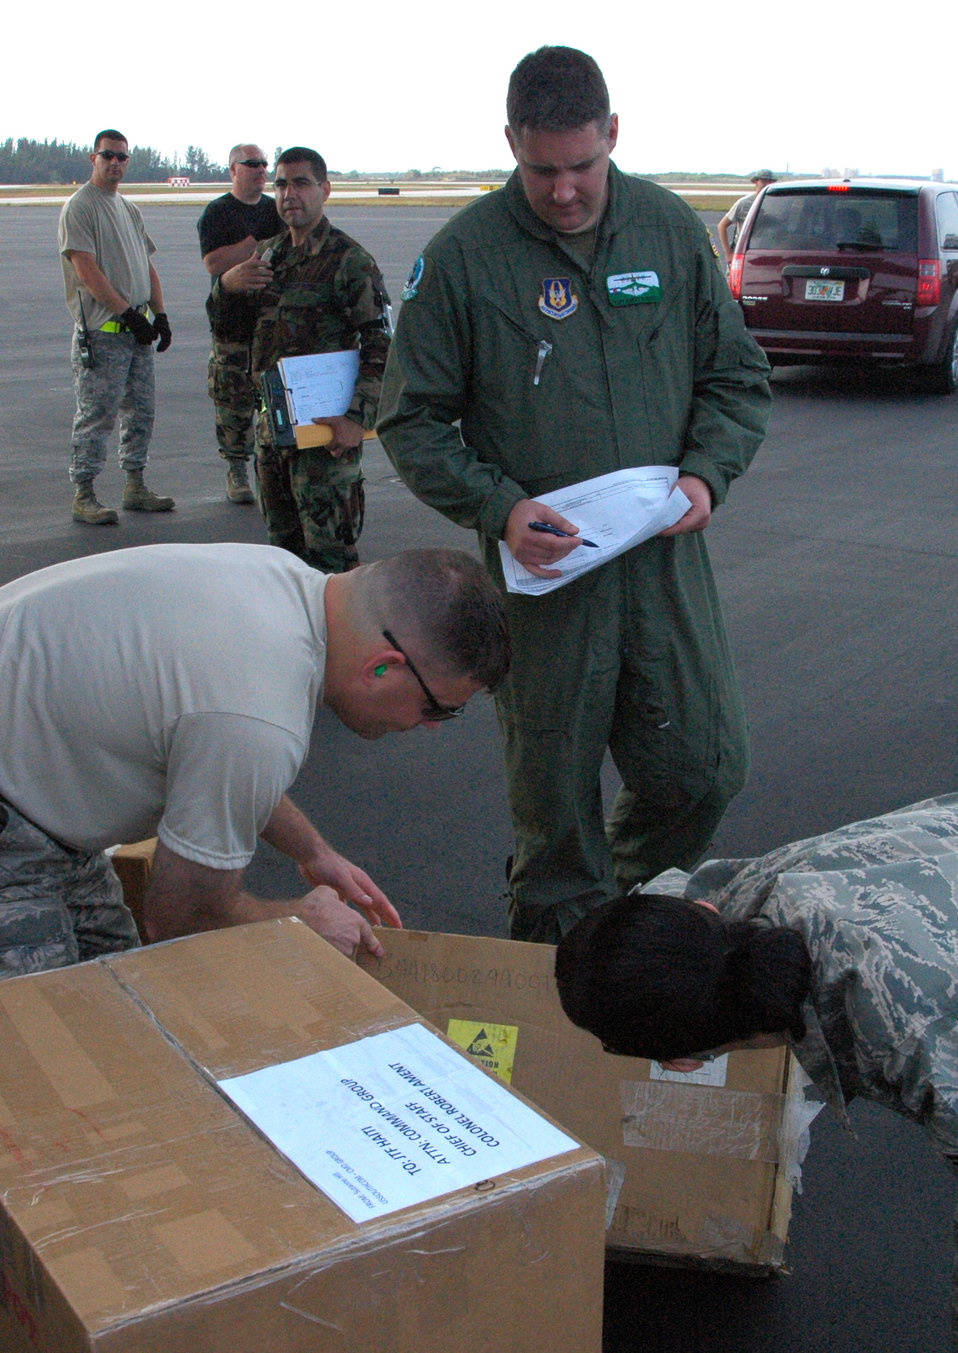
Airmen continue relief aid flights into Haiti

Tech. Sgt. Barry Burkitt goes over packages prior to their loading Jan. 30, 2010, at Homestead Air Reserve Base, Fla. The packages were later loaded onto a C-130 Hercules operated by the 302nd Airlift Wing, one of two wings assigned to the 35th Expeditionary Airlift Squadron, which supports Air Expeditionary Force Coronet Oak. The members are deployed in support of Haiti earthquake relief operations, some of which are based at Muniz Air Base, Puerto Rico.